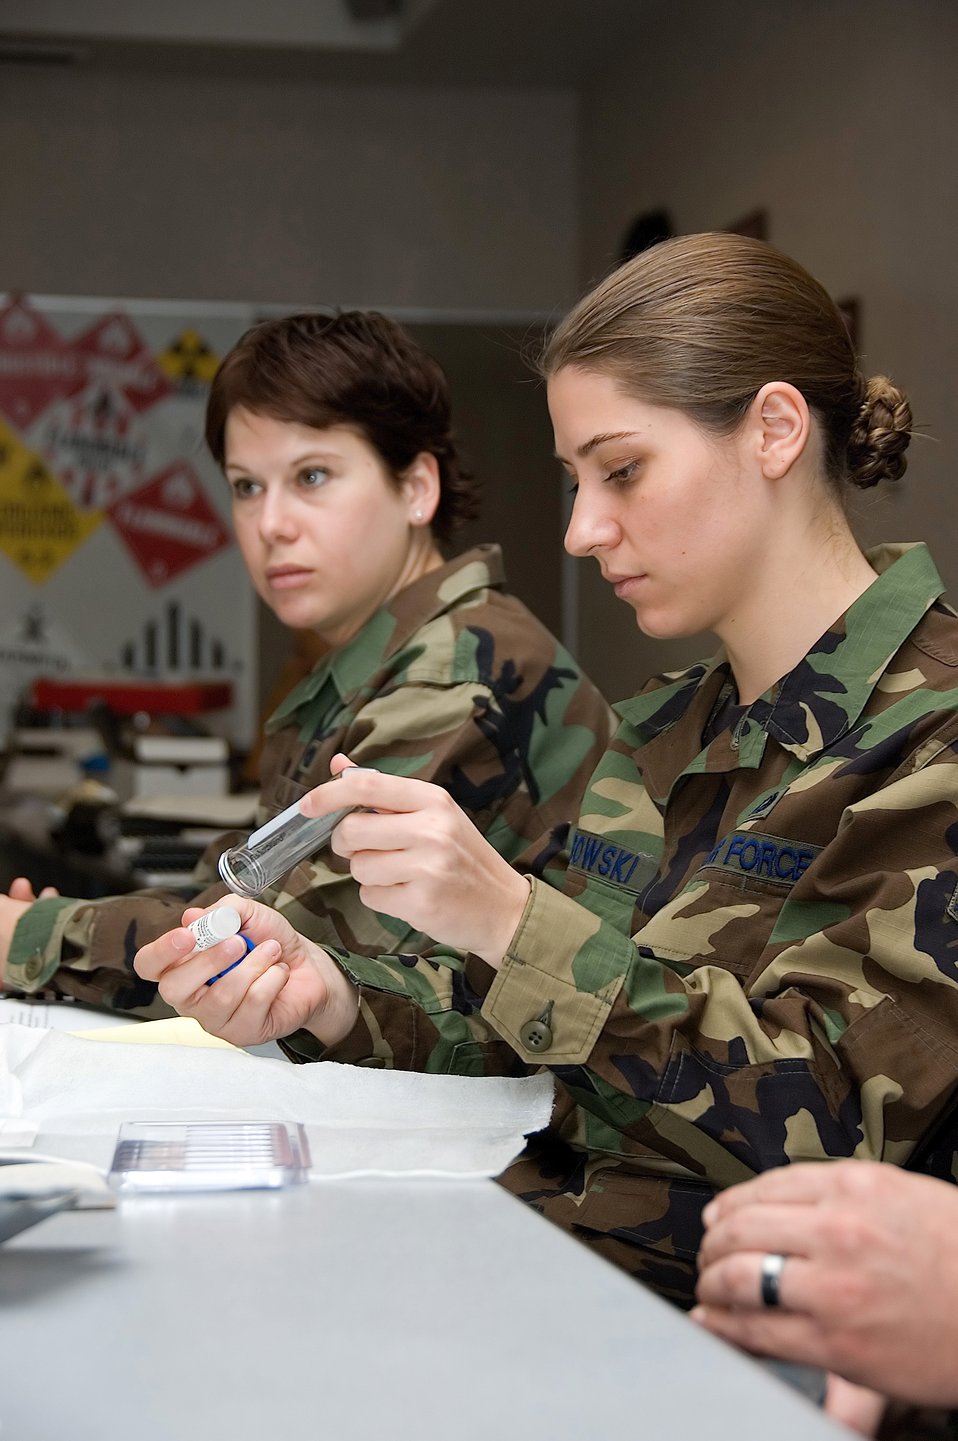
JPM Guardian helps protect warfighter

Senior Airman Krystal Kamrowski, (right) checks out detection equipment used to identify biological agents while Airman 1st Class Amanda Marshall observes and listens to the instructor's remarks Nov. 6 Dover Air Force Base, Del. More than 30 students from various base units attended the class, which was one portion of a week-long training package and assessment of the base's chemical, biological, readiness, nuclear and explosive, and emergency management programs. Airmen Kamrowski and Marshall are 436th Civil Engineer Squadron readiness specialists from Dover AFB.